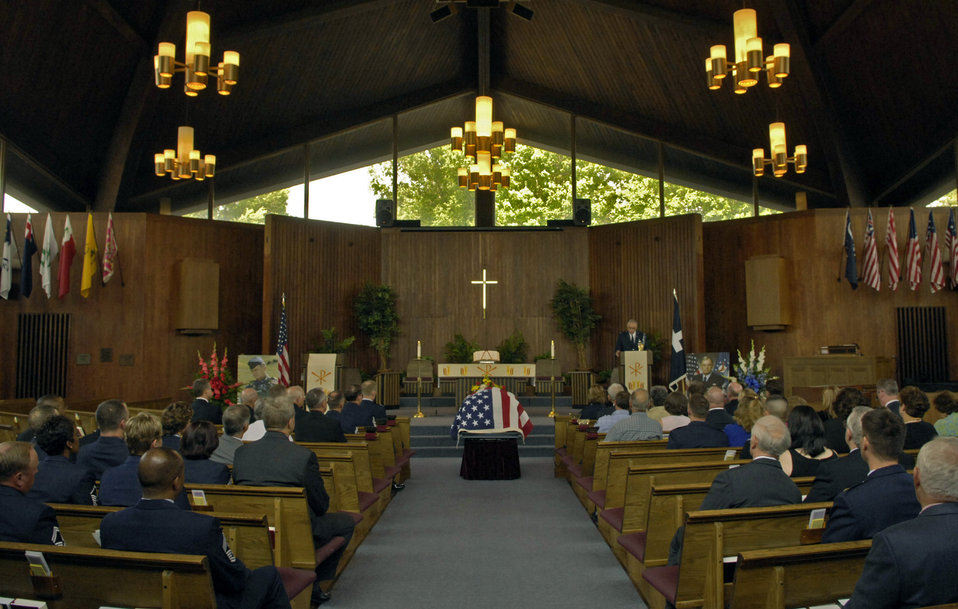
Chief Pfingston laid to rest at Arlington

Chaplain (Col.) Charlie Stutts officiates the full honors funeral of former Chief Master Sergeant of the Air Force Gary R. Pfingston July 6 at Arlington National Cemetery, Va. The 10th CMSAF was born in Evansville, Ind., and entered the Air Force in February 1962. He passed away June 23 in San Antonio.